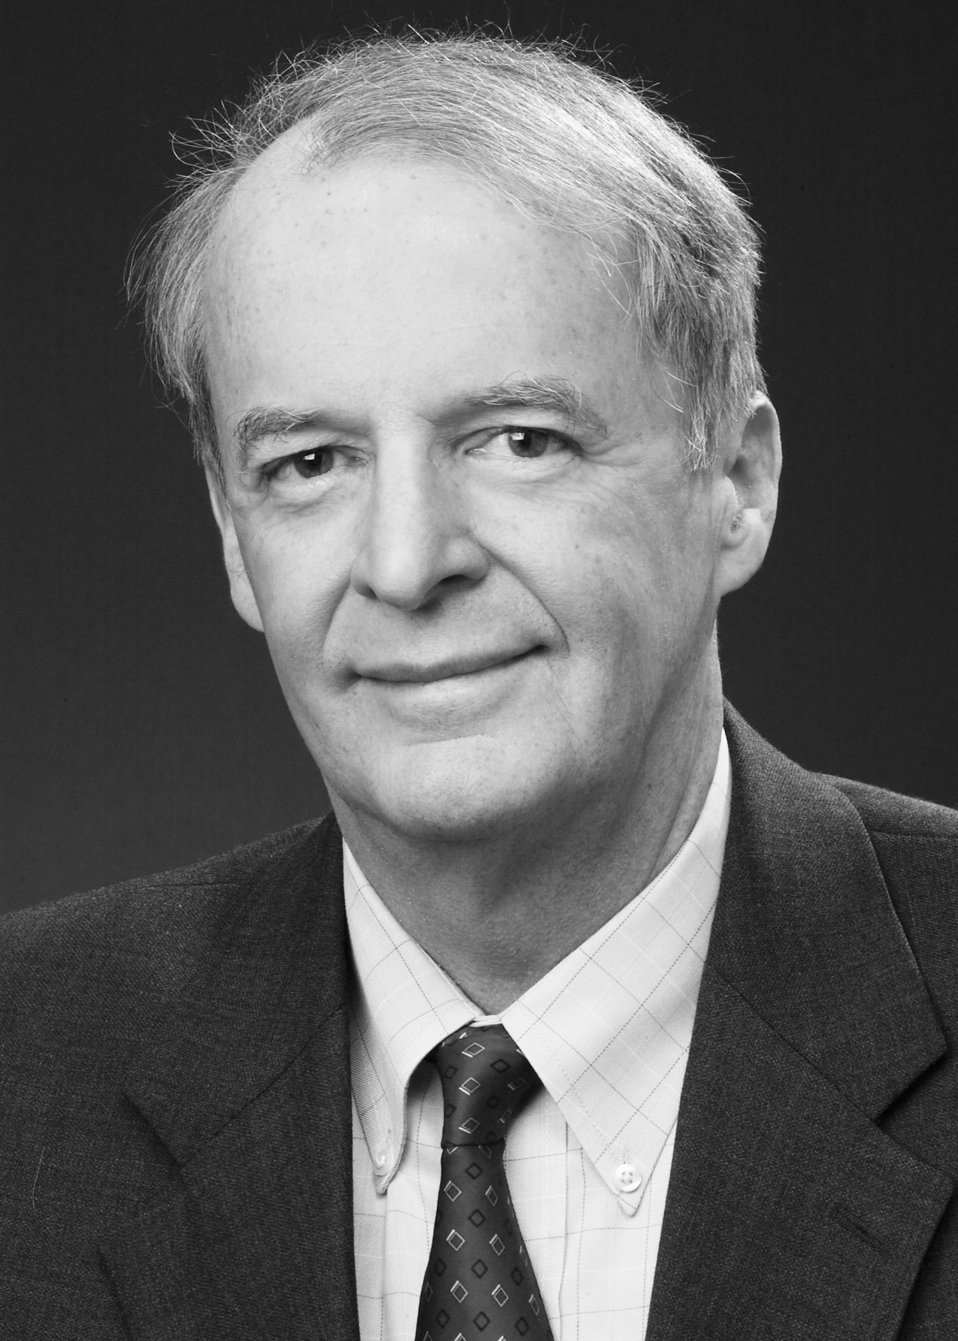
James M. Hughes, M.D., Director of the National Center for Infectious Diseases.